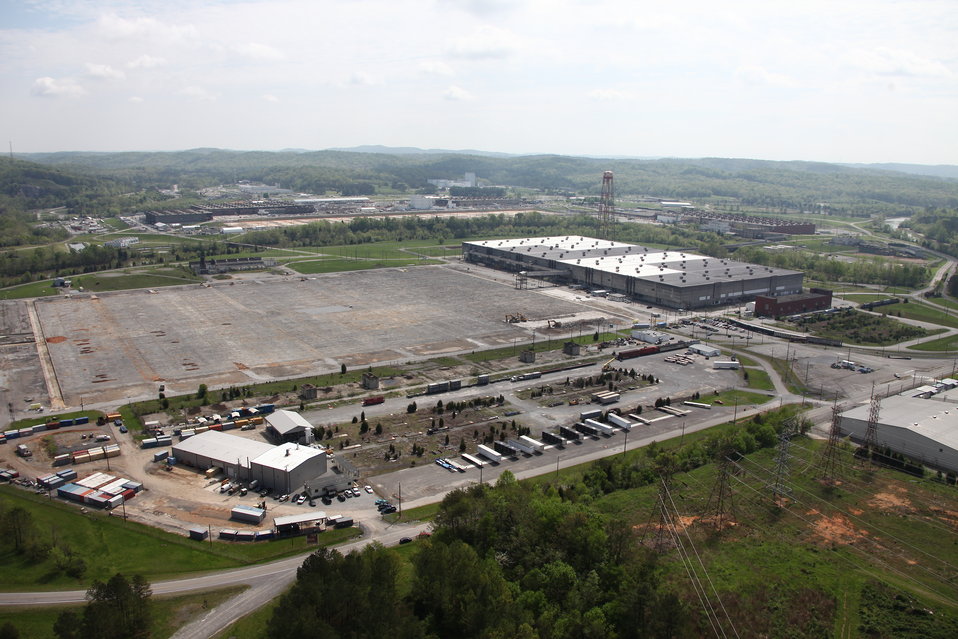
ETTP